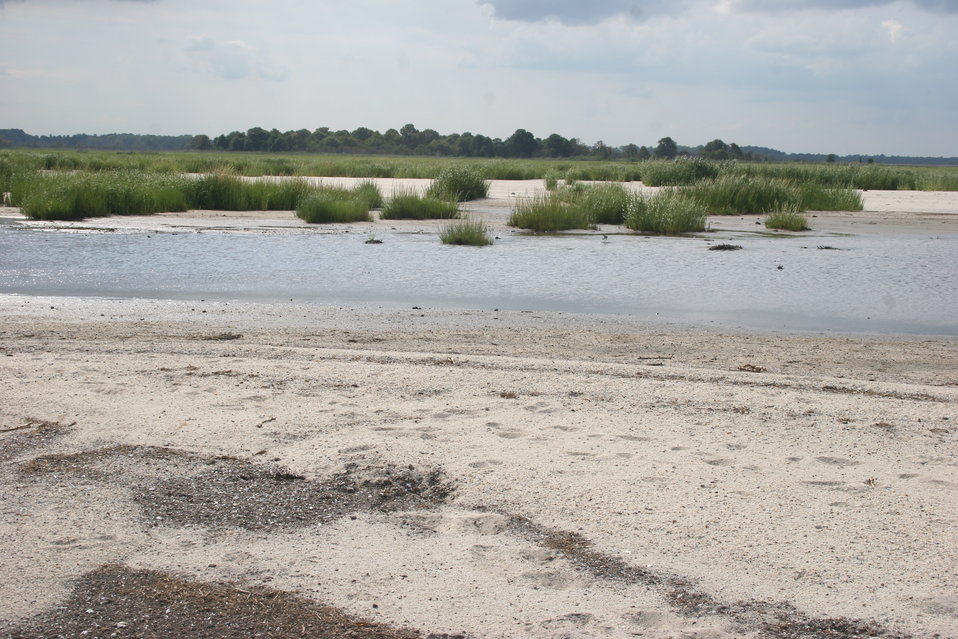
Salt Marsh at Prime Hook NWR